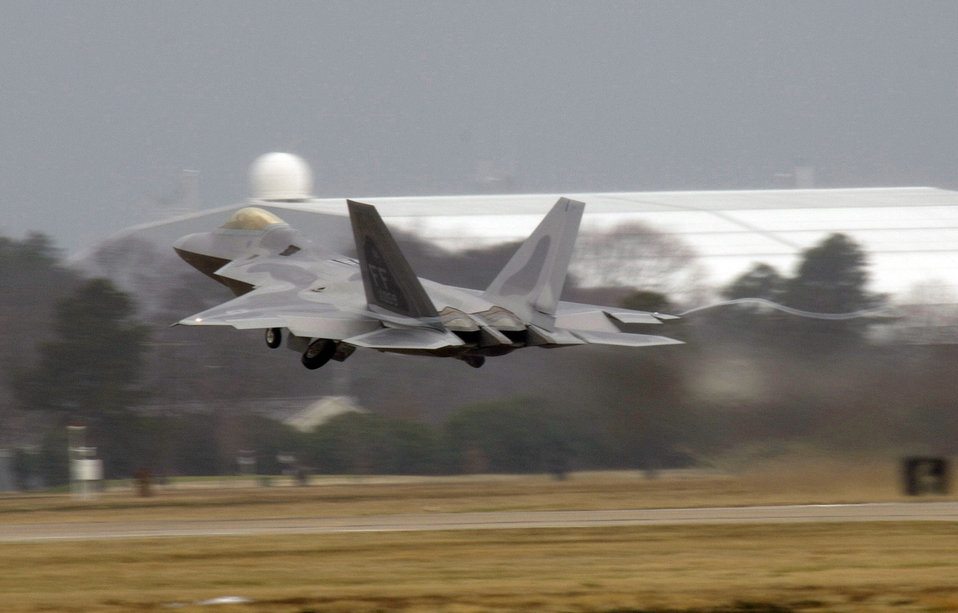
Operation Noble Eagle

LANGLEY AIR FORCE BASE, Va. (AFPN) -- An F-22A Raptor takes off from Langley Air Force Base Jan. 21 during an Operation Noble Eagle mission. This historical event marks the first time the F-22A Raptor is participating in the joint services operation to protect American soil. The Raptor is piloted by Lt. Col. James Hecker, the 27th Fighter Squadron commander.